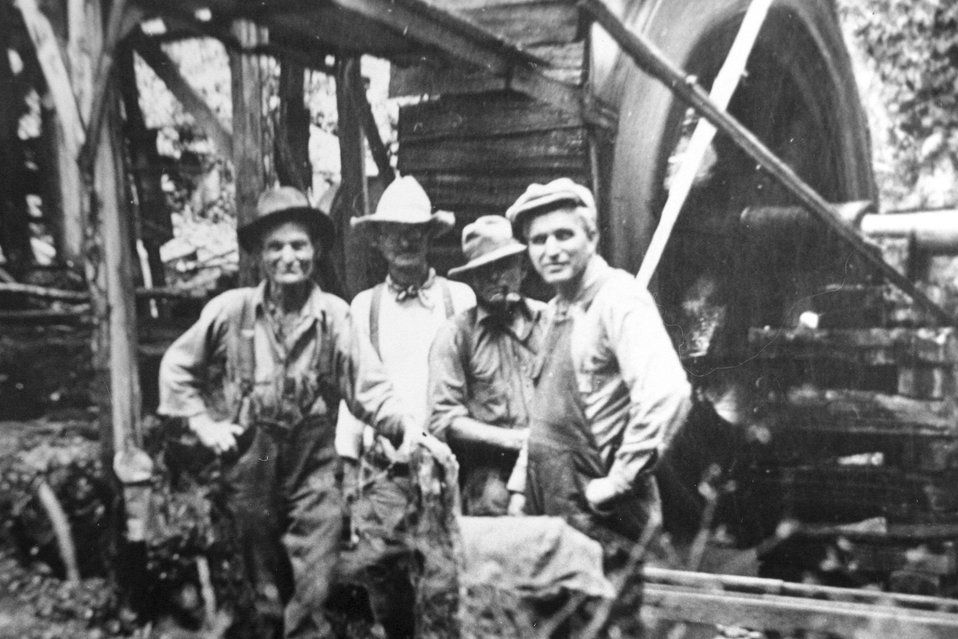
Mule Creek Arrastra West Fork of Mule Creek. (L R) Charlie Lewis, Slim Damon, Andy Huggins, Merle Alexander. Arrastra is used to grind gold bearing rock. Waterwheel turns a vertical spindle with arms that drag heavy stones over crushed ore spread on a circular bed of stones or concrete floor.